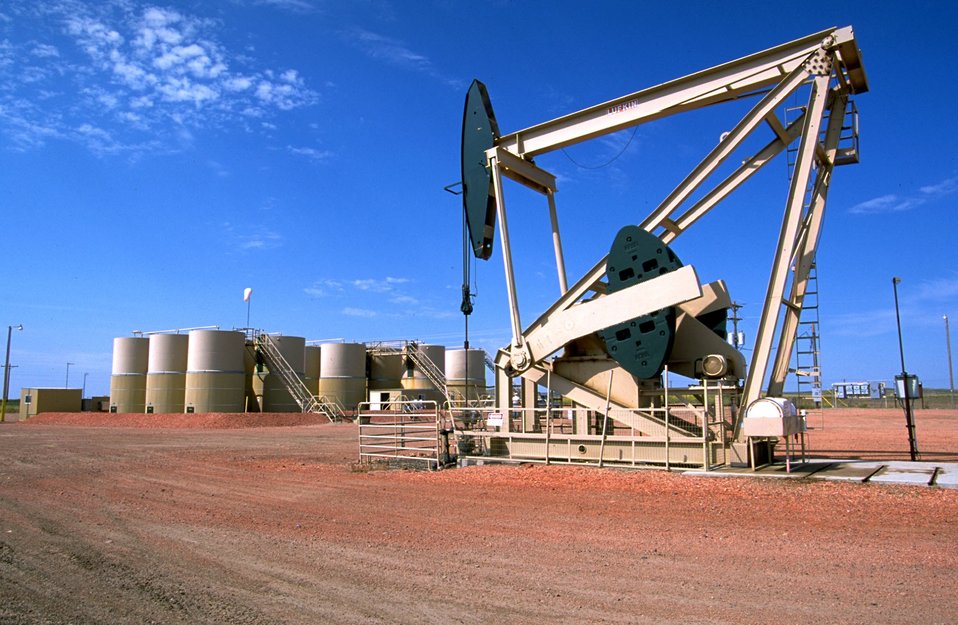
Cotes central tank battery with pump in foreground